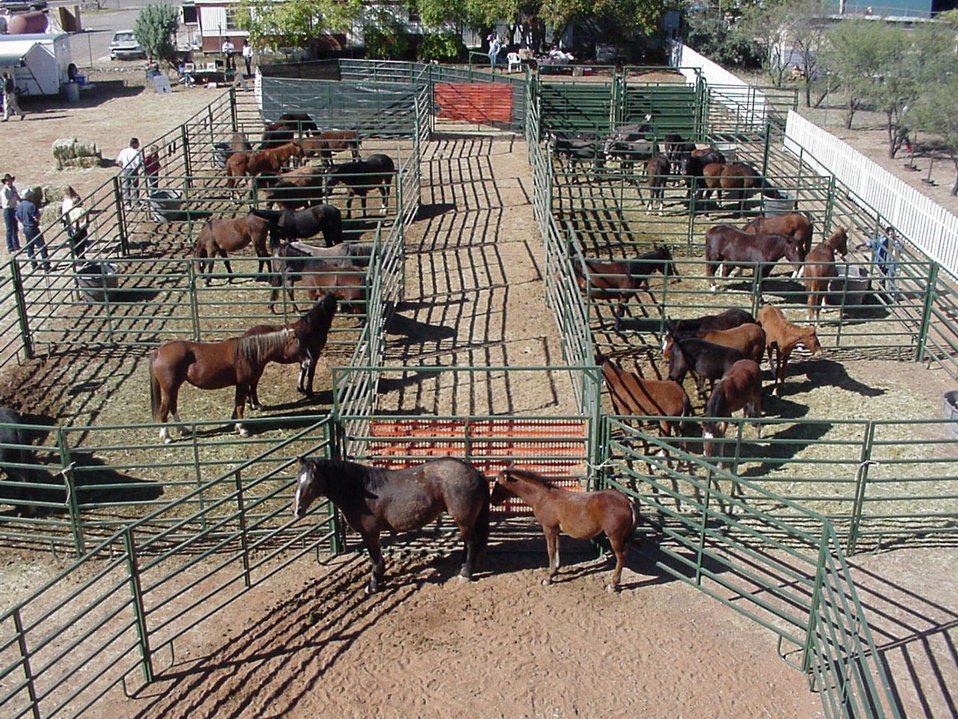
An overhead view of the protable corrals used by the BLM for the wild horse and burro adoption.